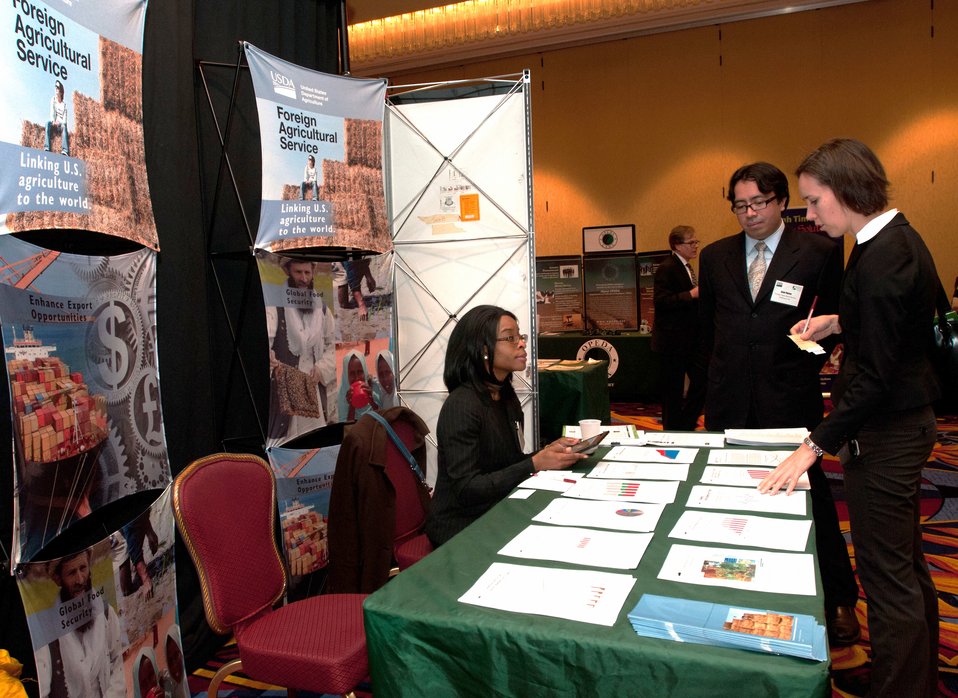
2013 Agricultural Outlook Forum, held at the Crystal Gateway Marriott Hotel, Arlington, Virginia on Thursday, Feb. 21, 2013. This annual Forum brings together producers, policymakers, business, government, and industry leaders to meet, exchange ideas, and discuss timely agriculture issues in the exhibit hall at the Ag Outlook Forum.